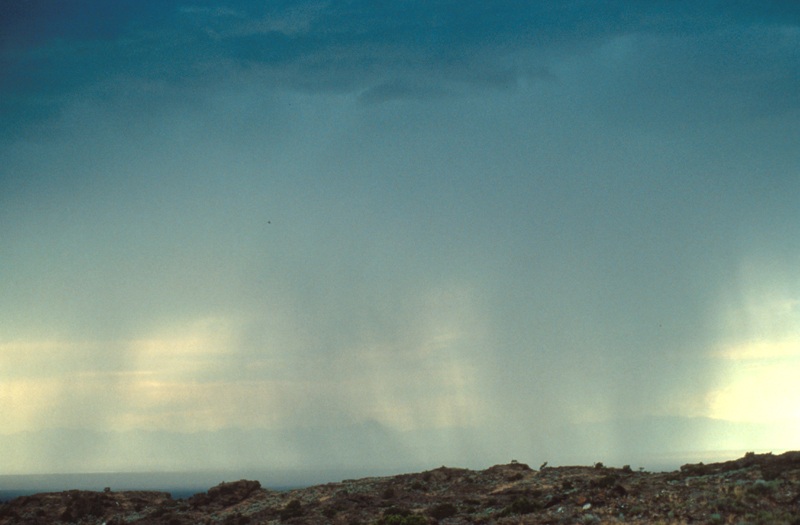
South Fork of the Snake River